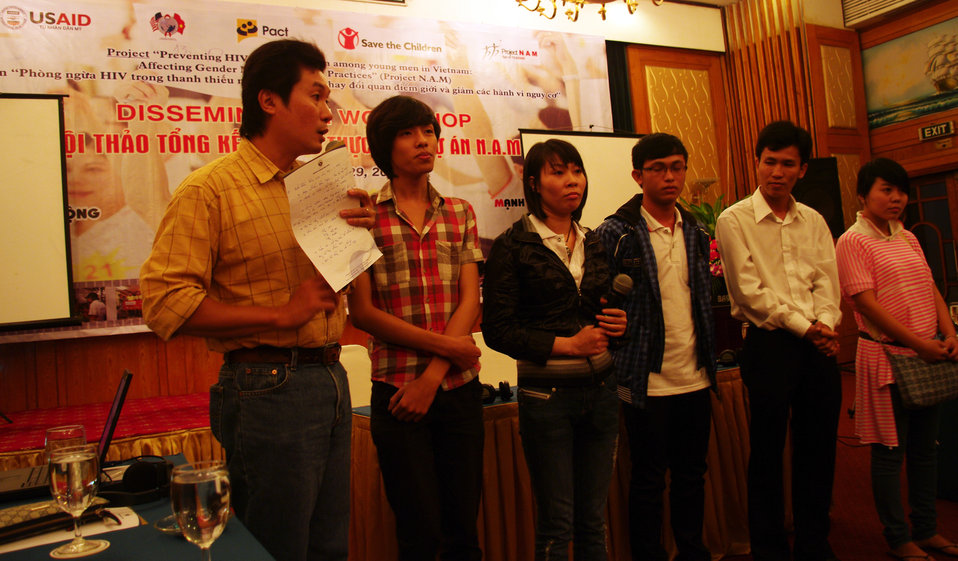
USAID Supports HIV Awareness among Street Youth and Young Men